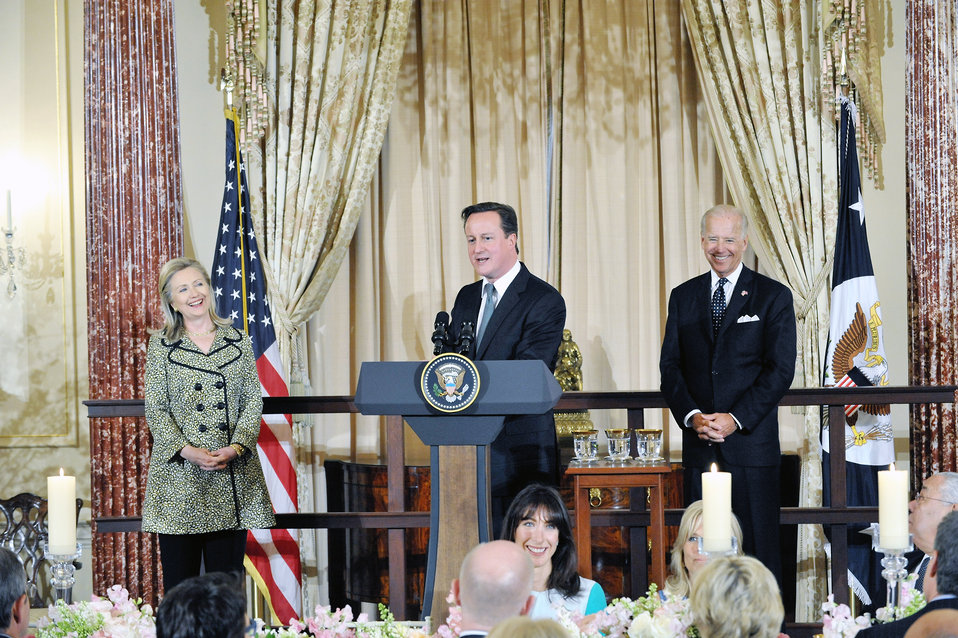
UK Prime Minister Cameron Delivers Remarks

UK Prime Minister David Cameron delivers remarks at a luncheon with U.S. Vice President Joseph Biden and U.S. Secretary of State Hillary Rodham Clinton at the U.S. Department of State in Washington, D.C., on March 14, 2012.